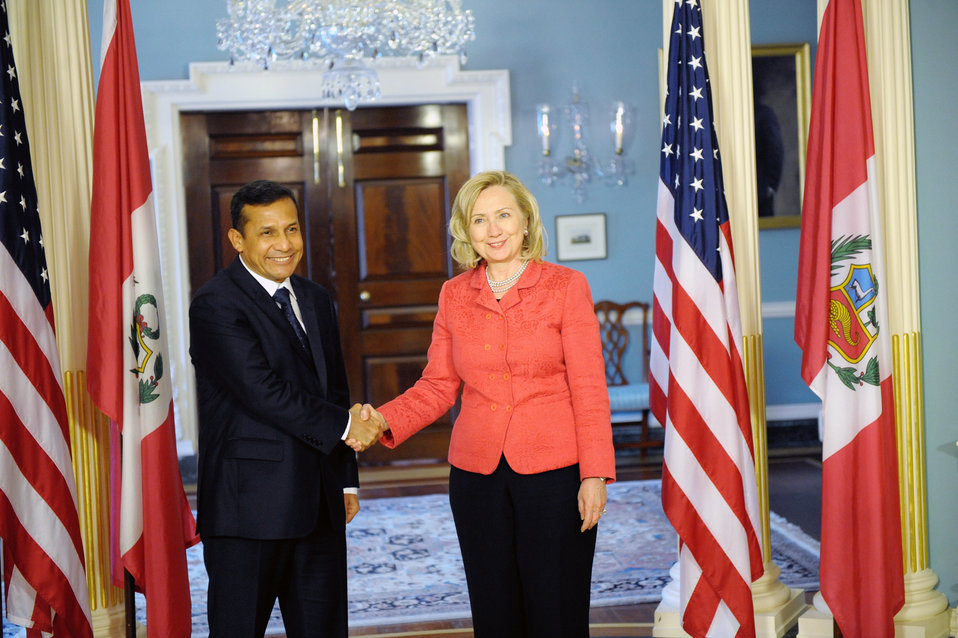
Secretary Clinton Shakes Hands With Peruvian President-Elect Humala

U.S. Secretary of State Hillary Rodham Clinton shakes hands with Peruvian President-Elect Ollanta Humala, at the U.S. Department of State in Washington, D.C., on July 6, 2011.